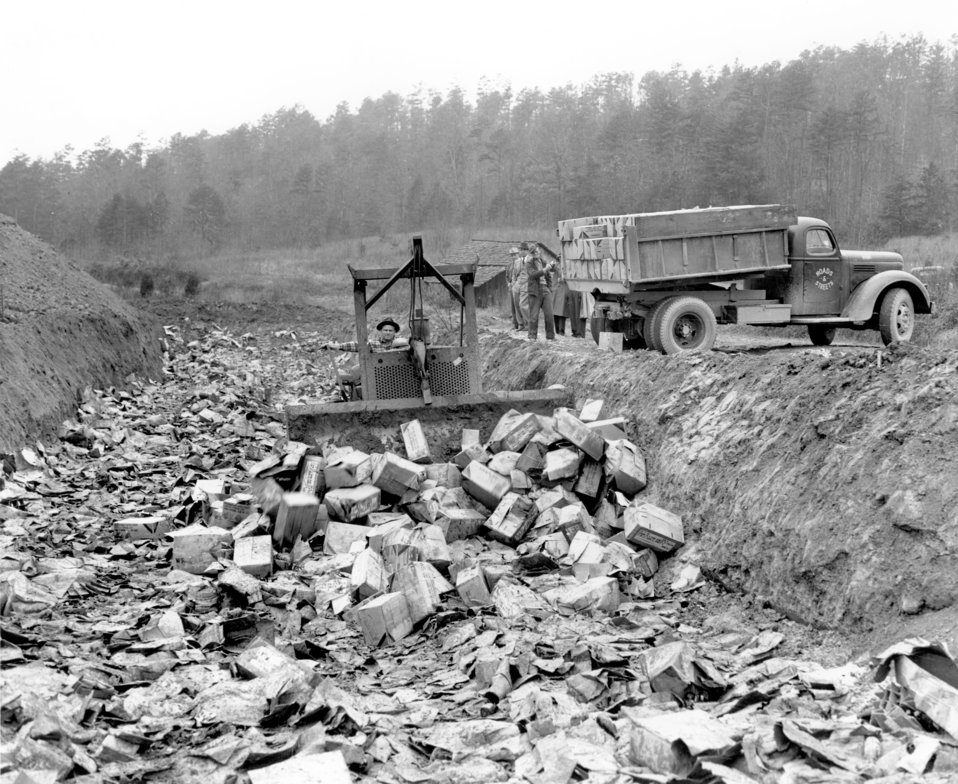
Spoiled Beer Oak Ridge 1946

3177-5 DOE photo Ed Westcott 12-11-1946 Destruction of 2,000 Cases of Beer Oak Ridge Tennessee